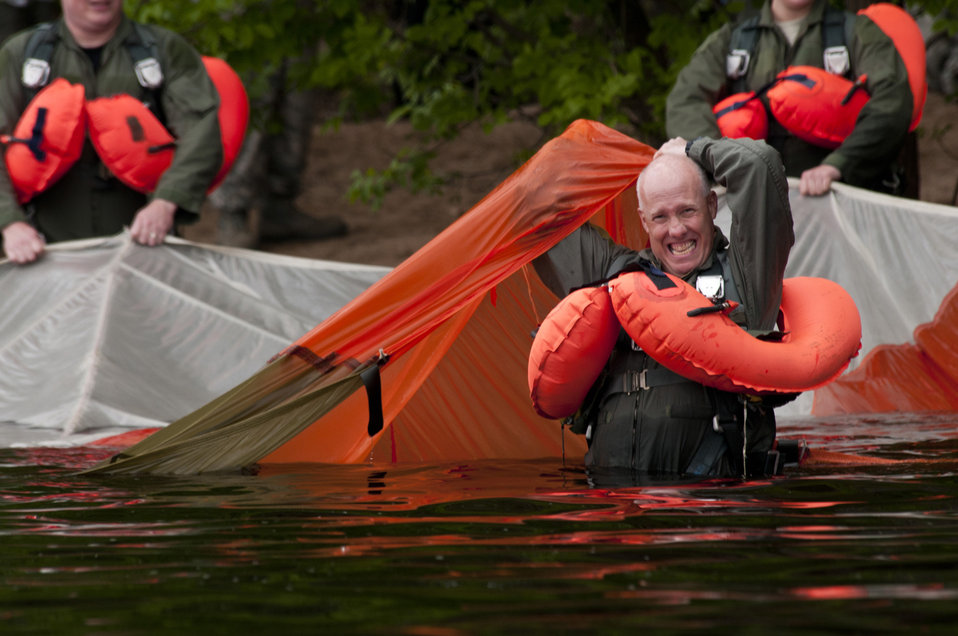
I'm out of here

Lt. Col. Daniel Gabrielli emerges from under a parachute canopy June 11, 2011, during aircrew survival training in the St. Croix River near Hastings, Minn. Colonel Gabrielli is assigned to the Minnesota Air National Guard's 133rd Airlift Wing.